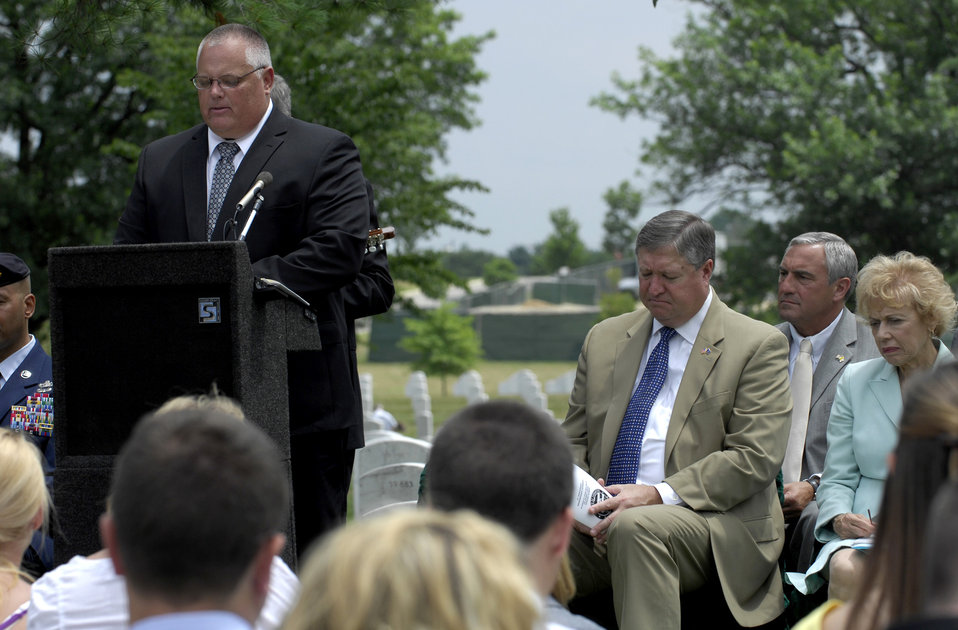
Remembrance

Retired Master Sgt. Eric Ziegler addresses guests during a remembrance ceremony, June 25, 2011, at Arlington National Cemetery, Va., to mark the 15th anniversary since the Khobar Towers bombing. Nineteen Airmen were killed in the terrorist bombing, June 25, 1996, at Dhahran Air Base, Saudi Arabia.